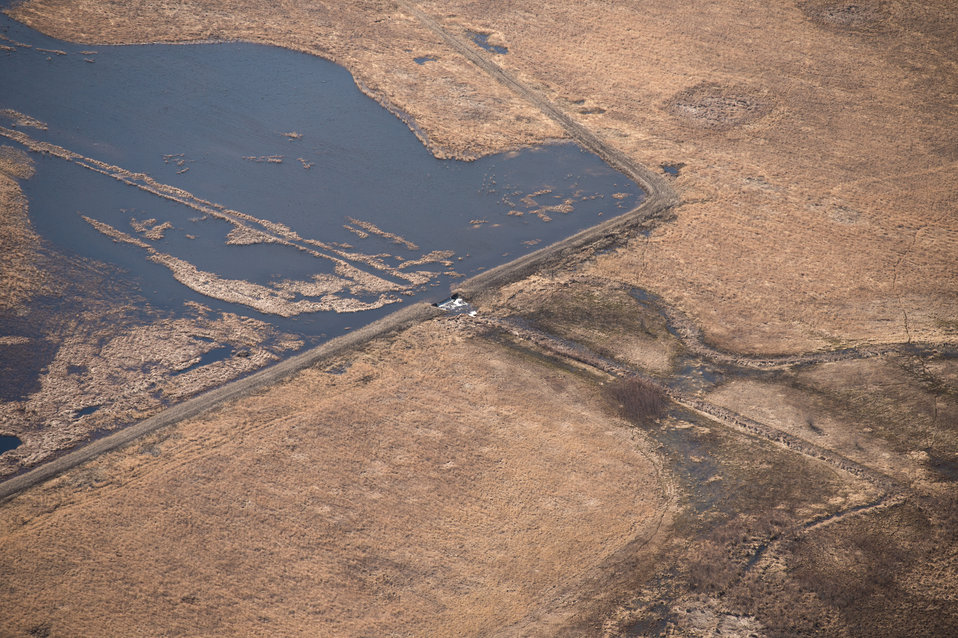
Ehlert North U.S. Department of Agriculture (USDA) Natural Resources Conservation Service (NRCS) Wetland Reserve Program (WRP) in Wilkin County, MN, on Tuesday, April 30, 2013. For information about this and other programs from the USDA Red River Basin Initiative (RRBI) please see www.mn.nrcs.usda.gov/news/features13/RRBI.html.